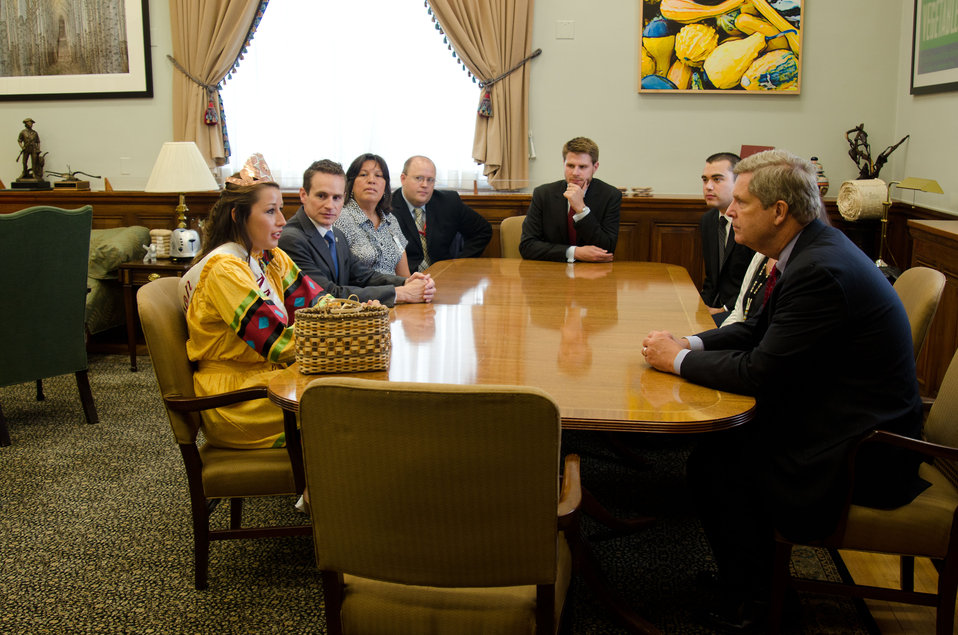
Miss Cherokee 2010-2011 Brooke Hudson (left) and officers of the Cherokee nation met with U.S. Department of Agriculture Secretary Tom Vilsack (right), Under Secretary for Food, Nutrition and Consumer Services Kevin Concannon, Under Secretary for Rural Development Dallas Tonsager, Agriculture Chief of Staff Krysta Harden; Senior Advisor to Agriculture Secretary Tom Vilsack with the USDA Office of Tribal Relations Janie Hipp and Agriculture Deputy Under Secretary for Food, Nutrition and Consumer Services Janey Thornton in Washington, DC, on Tuesday, August 9, 2011. During the meeting Miss Hudson presented Secretary Vilsack with a book that told of the 'Trails of Tears,' the relocation that included the movement of the Cherokee Nation in 1938 from the southeastern United States to Oklahoma. Hudson had completed a cycling journey along the same route. The trip took her more then 20 days to complete. She told of how the experience was both physically and emotionally demanding.